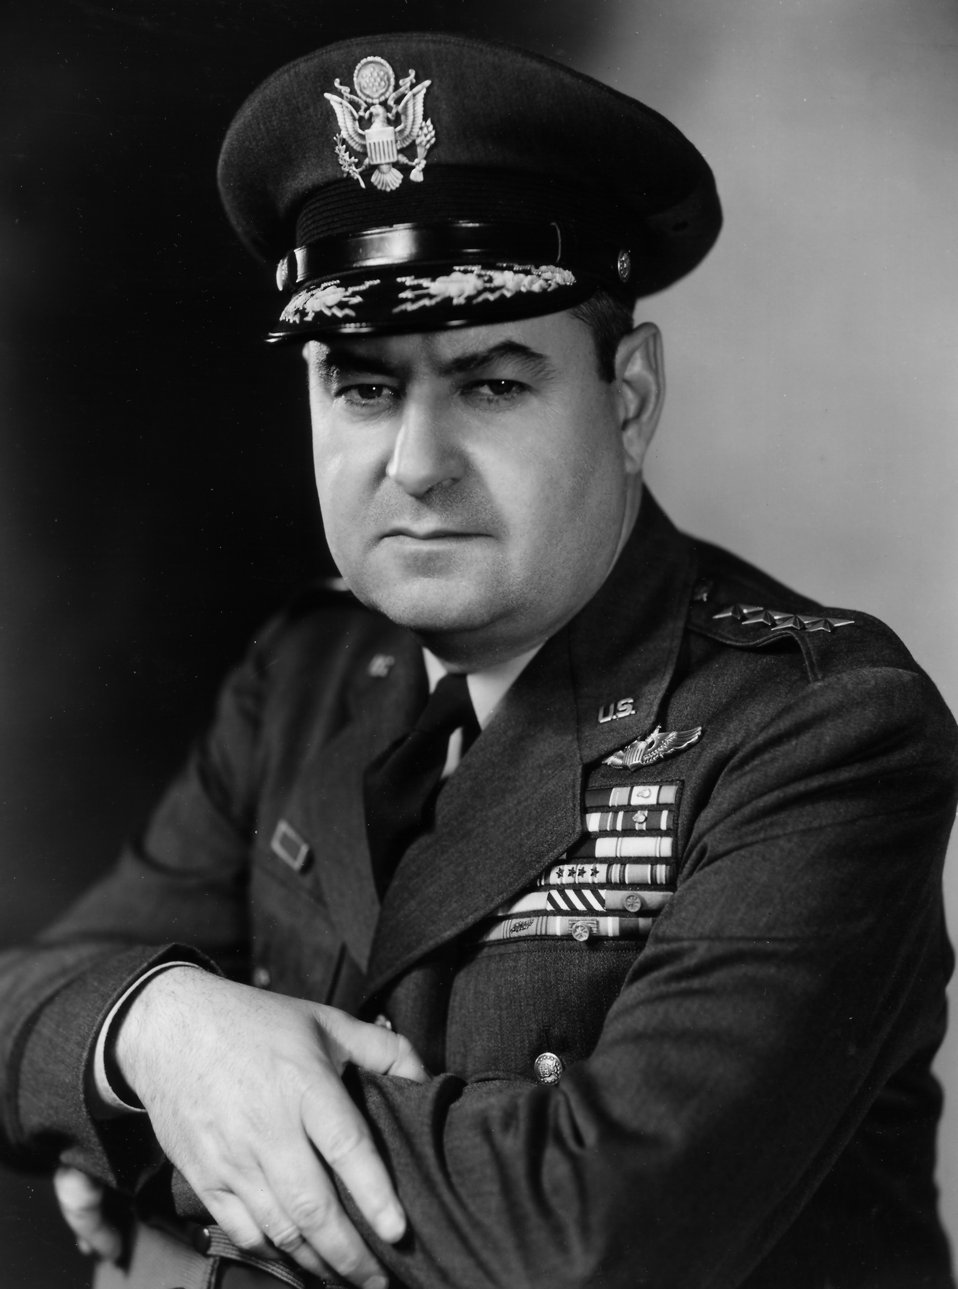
Curtis LeMay

1940's -- Curtis LeMay